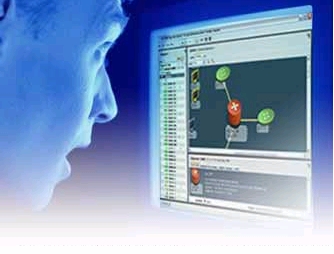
Spectrum OneClick User Interface